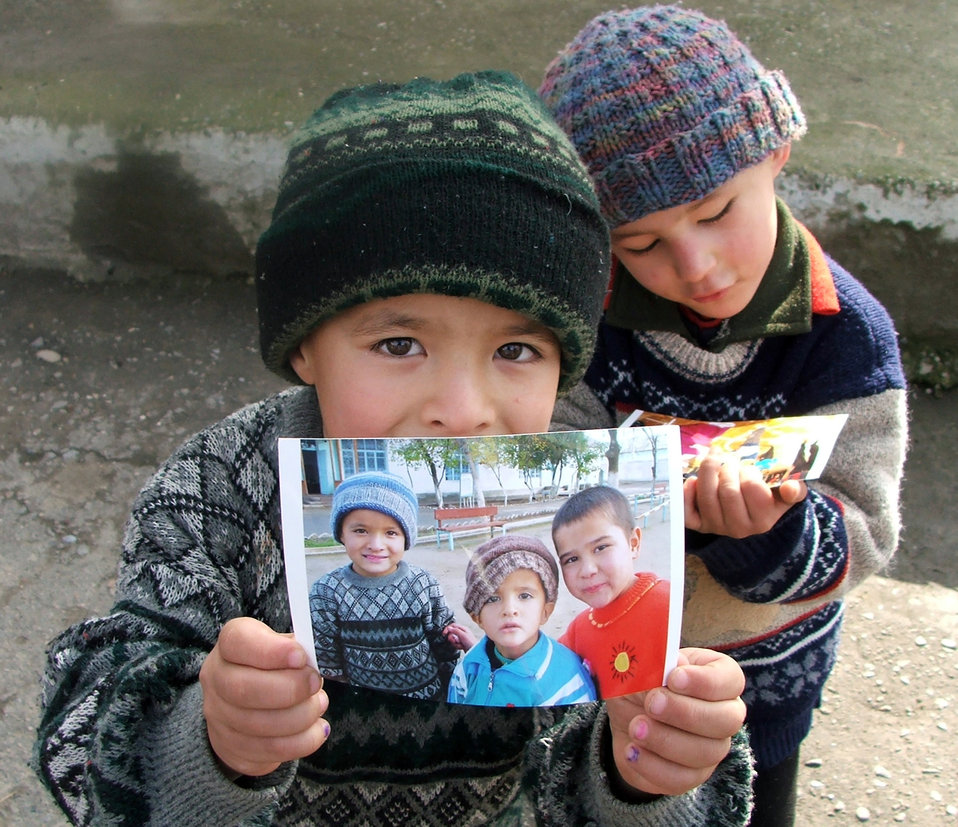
Darling, you look marvelous

KARSHI, Uzbekistan -- An Uzbek boy at a local orphanage here holds up a picture given to him by visiting servicemembers Jan. 22 while his brother looks at a picture he was given. The visit by Airmen, Soldiers and civilians from nearby Karshi-Khanabad Air Base was part of an ongoing humanitarian assistance program to Uzbek orphanages.